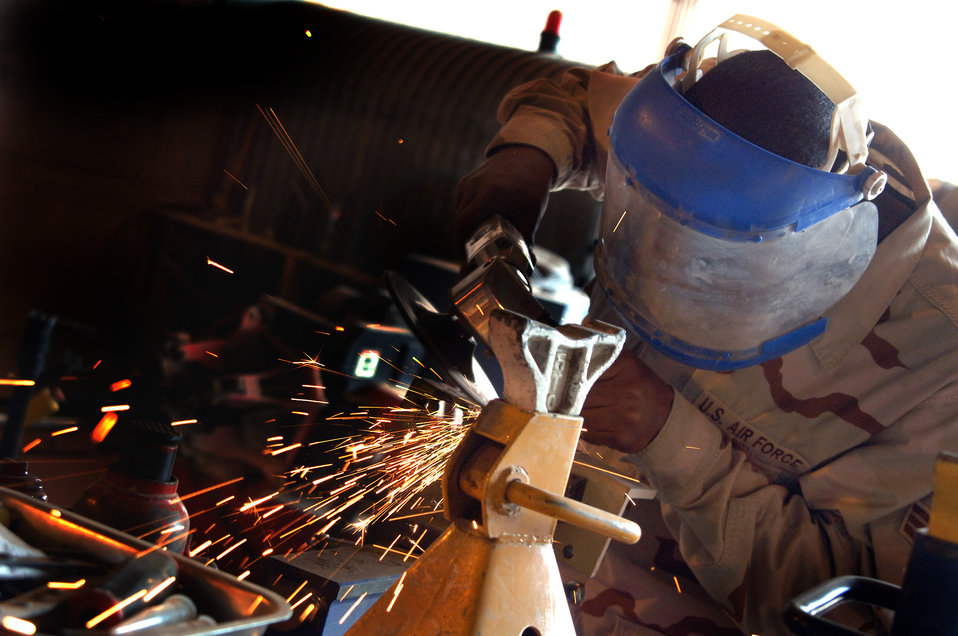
Work is such a grind

Senior Airman Jonathan Davis refines the surface of a welded bracket using a die grinder at Balad Air Base, Iraq. Airman Davis is a general purpose mechanic with the 332nd Expeditionary Logistics Readiness Squadron here deployed from McGuire Air Force Base, N.J.